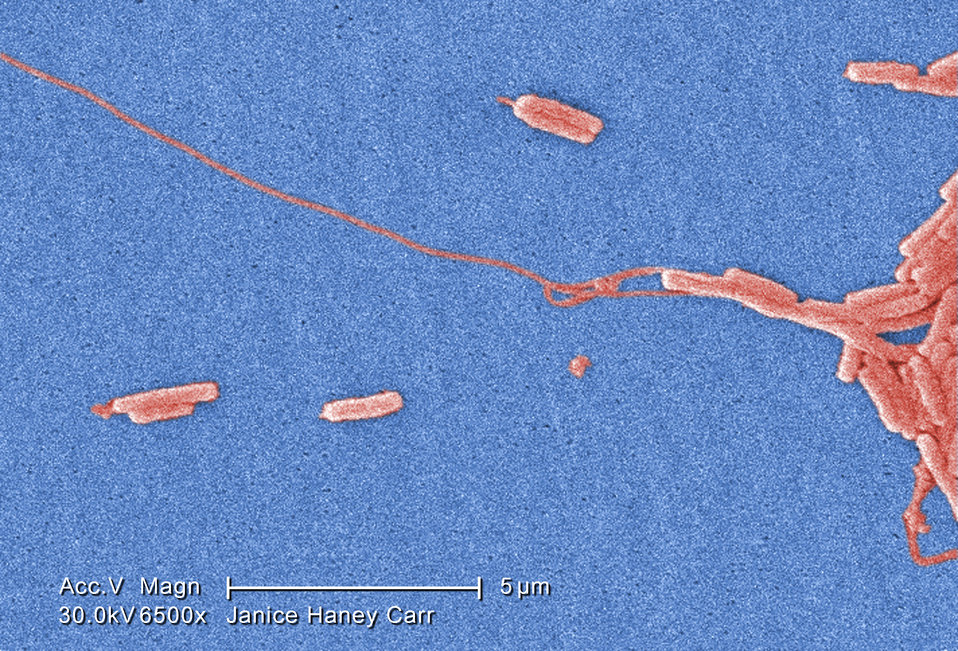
Under a very moderately-high magnification of 6500X, this colorized scanning electron micrograph (SEM) depicted a number of Gram-negative Legionella pneumophila bacteria. Please see PHIL 11092 through 11152 for additional SEMs of these organisms, specifically PHIL 11143 for a black and white version of this image. Of particular importance, is the presence of polar flagella, and pili, or long streamers, which due to their fragile nature, in some of these views seem to be dissociated from any of the bacteria.